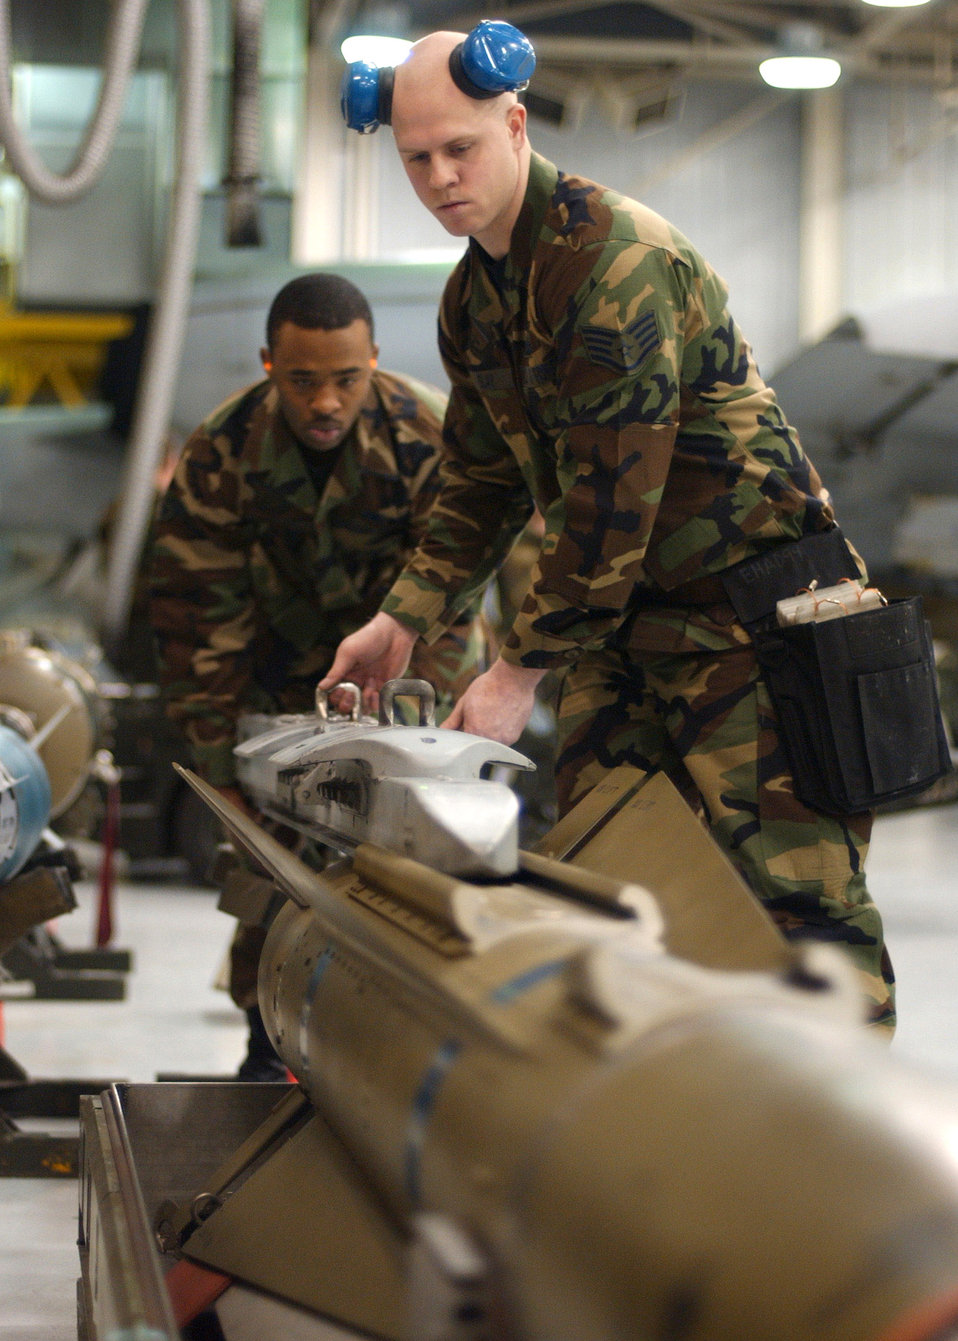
Competing for load crew honors

Staff Sgt. Aaron Slay (right) and Senior Airman Corneilius Cutler slide a bracket into place on top an air-to-ground missile to be loaded onto an F-16 Fighting Falcon during the Weapons Standardization Load Crew of the Year Competition Jan. 11 at Eielson Air Force Base, Alaska. The competition evaluates technical proficiency, safety procedures and overall time. The two are assigned to the 18th Aircraft Maintenance Unit. The 18th AMU's overall time was 56 minutes and 37 seconds.